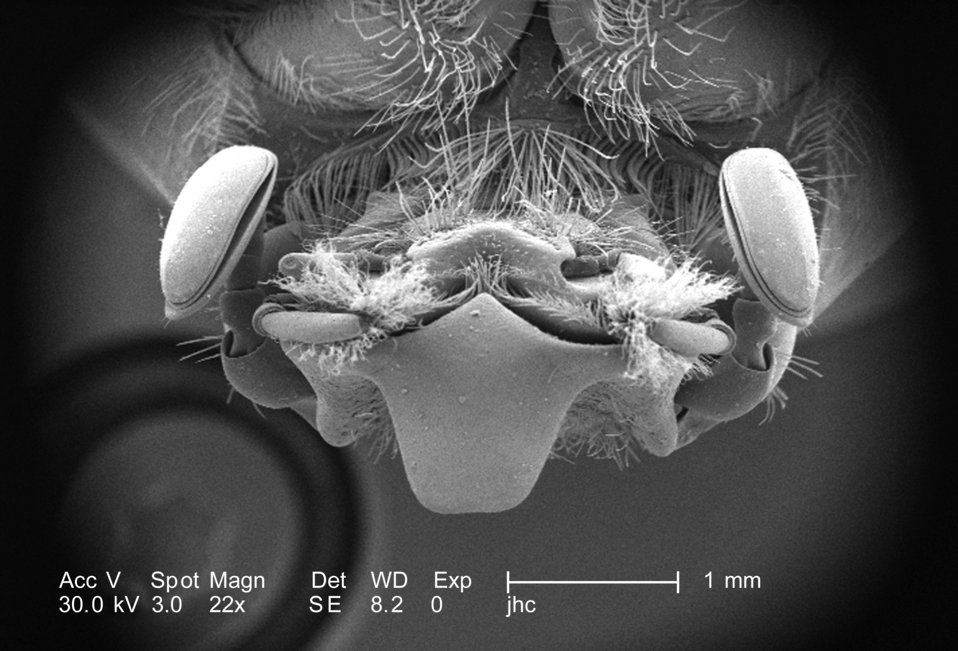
At a low magnification of only 22X, i.e., half that of PHIL 9929, this scanning electron micrograph (SEM) depicted some of the morphologic exoskeletal features located on the head region of an adult 'figeater' beetle, Cotinis mutabilis. Sometimes referred to as a 'junebug, this insect is a member of the taxonomic family, Scarabaeidae, or dung beetles.Equipped with 'lamellate' type antennae, the distal three sensorial segments have been folded over one another, which can be seen here in this image. This morphology is typically found in members of the family Scarabaeidae.The antennae provide the insect with data indicative of changes encountered in its environment such as chemical, thermal, and tactile queues. This beetle was found in the Decatur, Georgia suburbs.